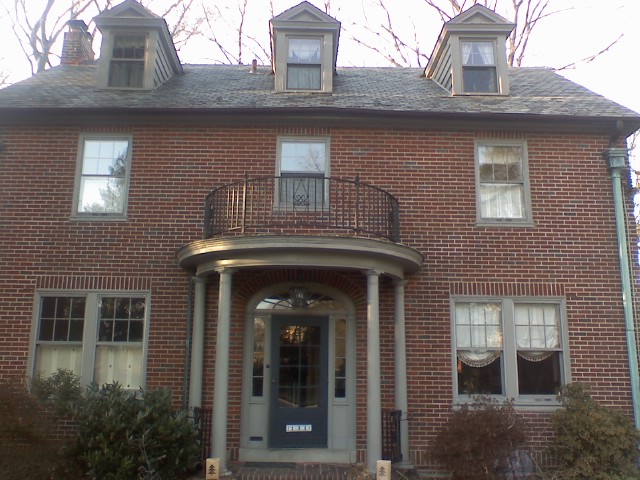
131 Hewett Road